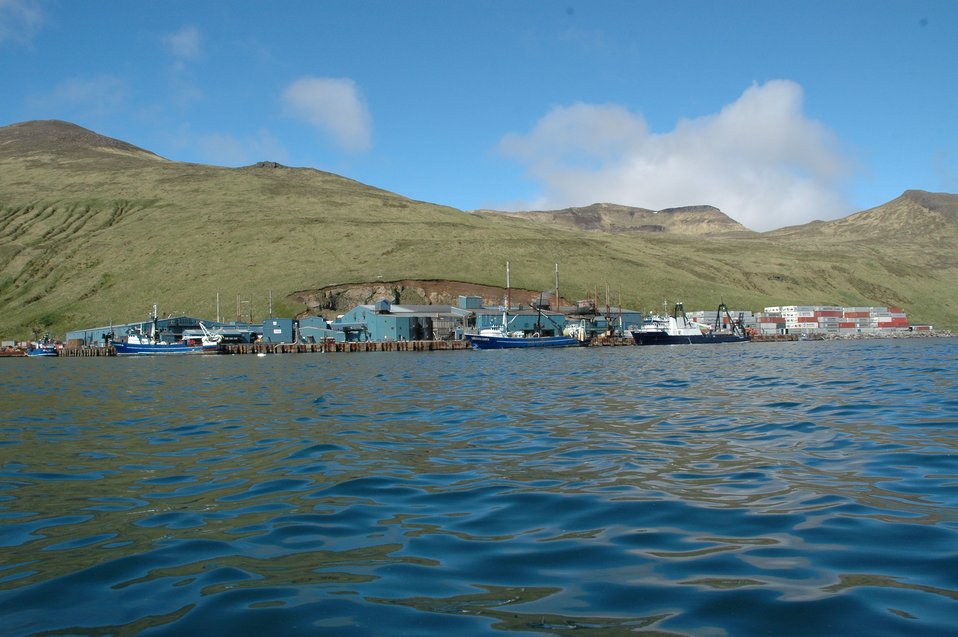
Fishing boats and stacked containers at Akutan Harbor